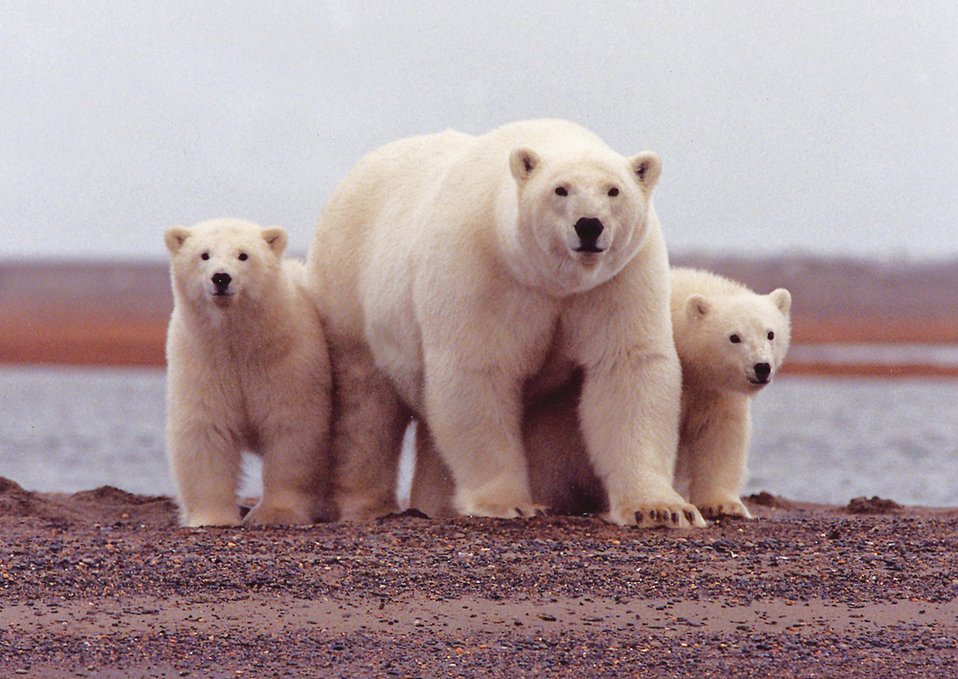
Polar Bear Female With Cubs Along the Beaufort Sea

A polar bear mother watches carefully with her cubs along her side as their picture is taken.